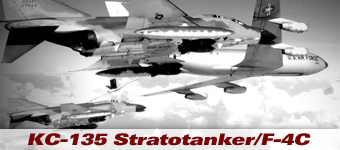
KC-135 with F-4 Phantoms

KC-135 Stratortanker with F-4 Phantom history spotlight graphic